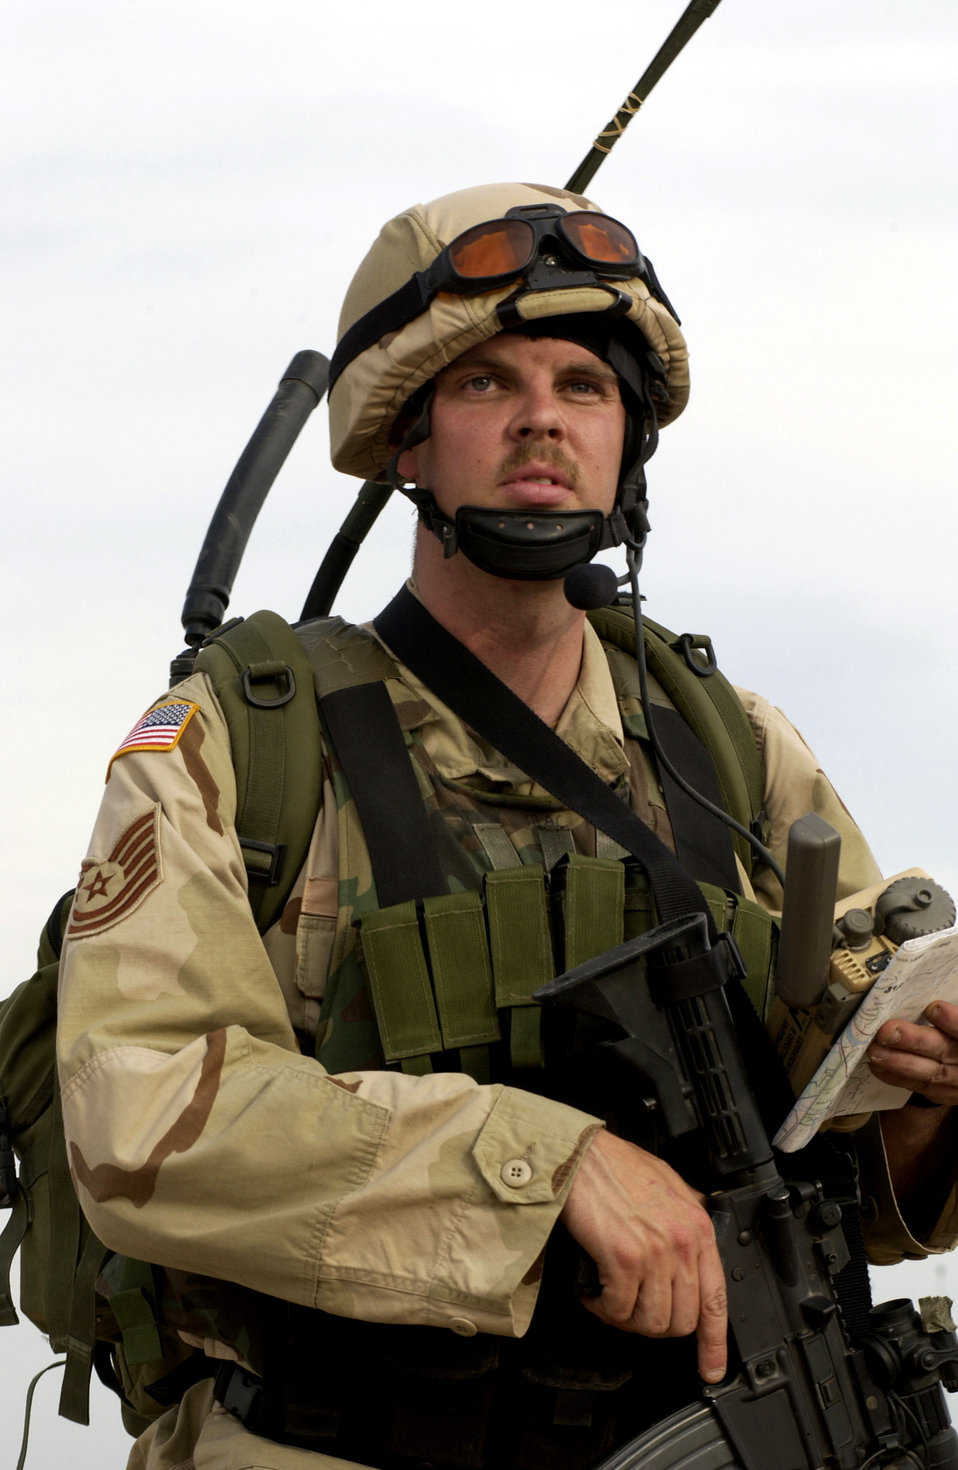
On patrol

BALAD AIR BASE, Iraq -- Tech. Sgt. Scott McDaniel patrols an area here April 26. He is a tactical air control party Airman from the 116th Air Support Operations Squadron.